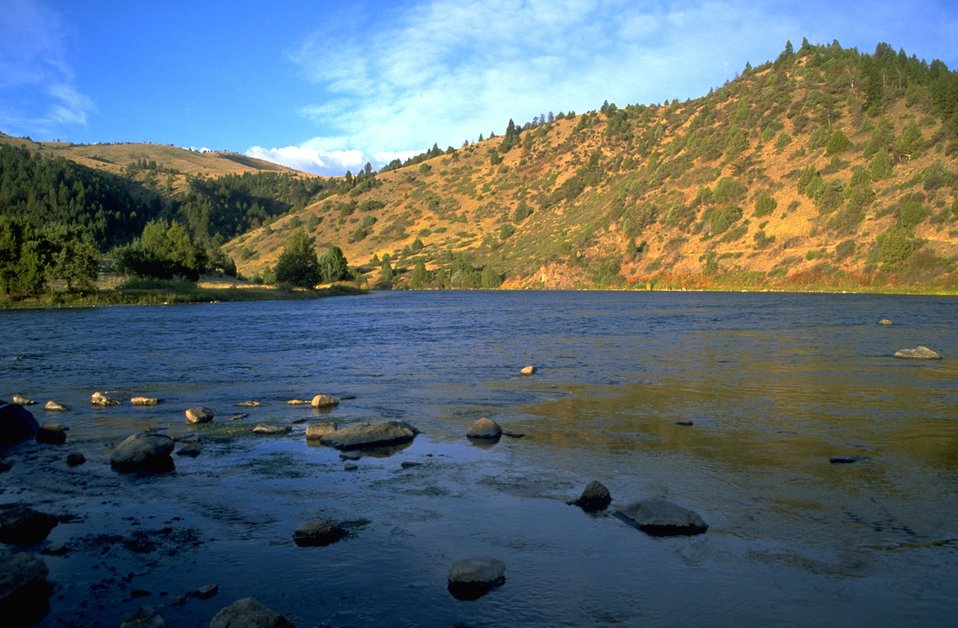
Evening light on the Madison River